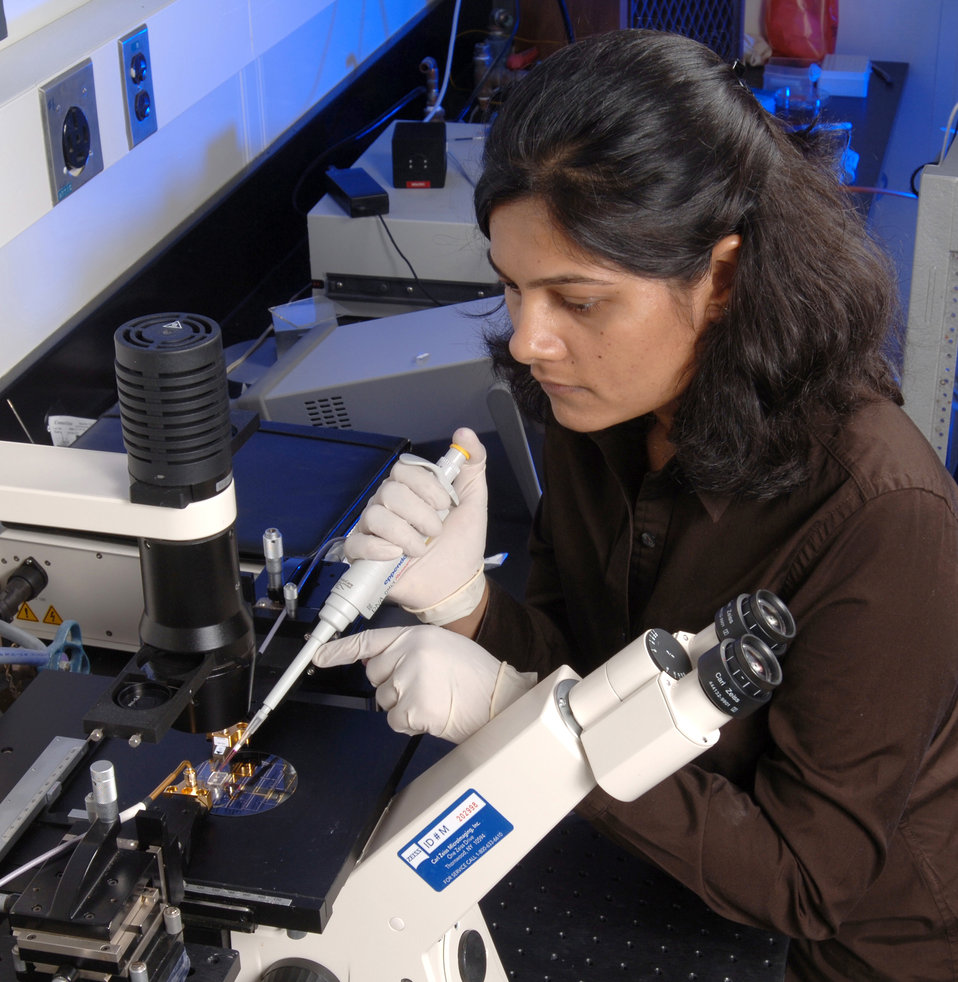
Lab-on-a-chip; Micro Microwave

NIST researcher Jayna Shah loads a sample of water into the miniature heating chamber of the NIST micro microwave oven.